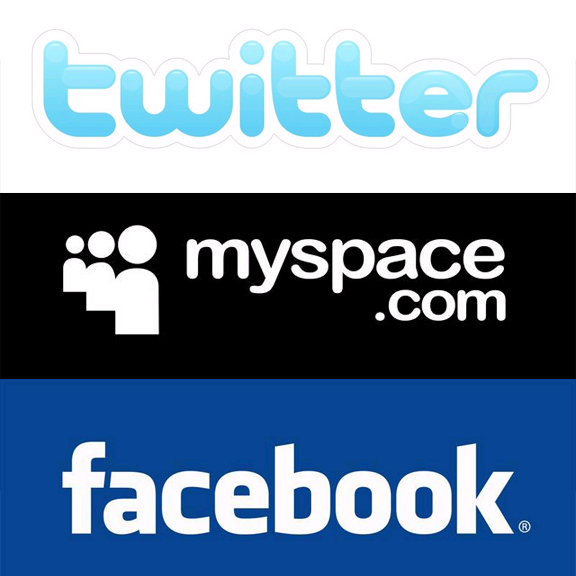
social media